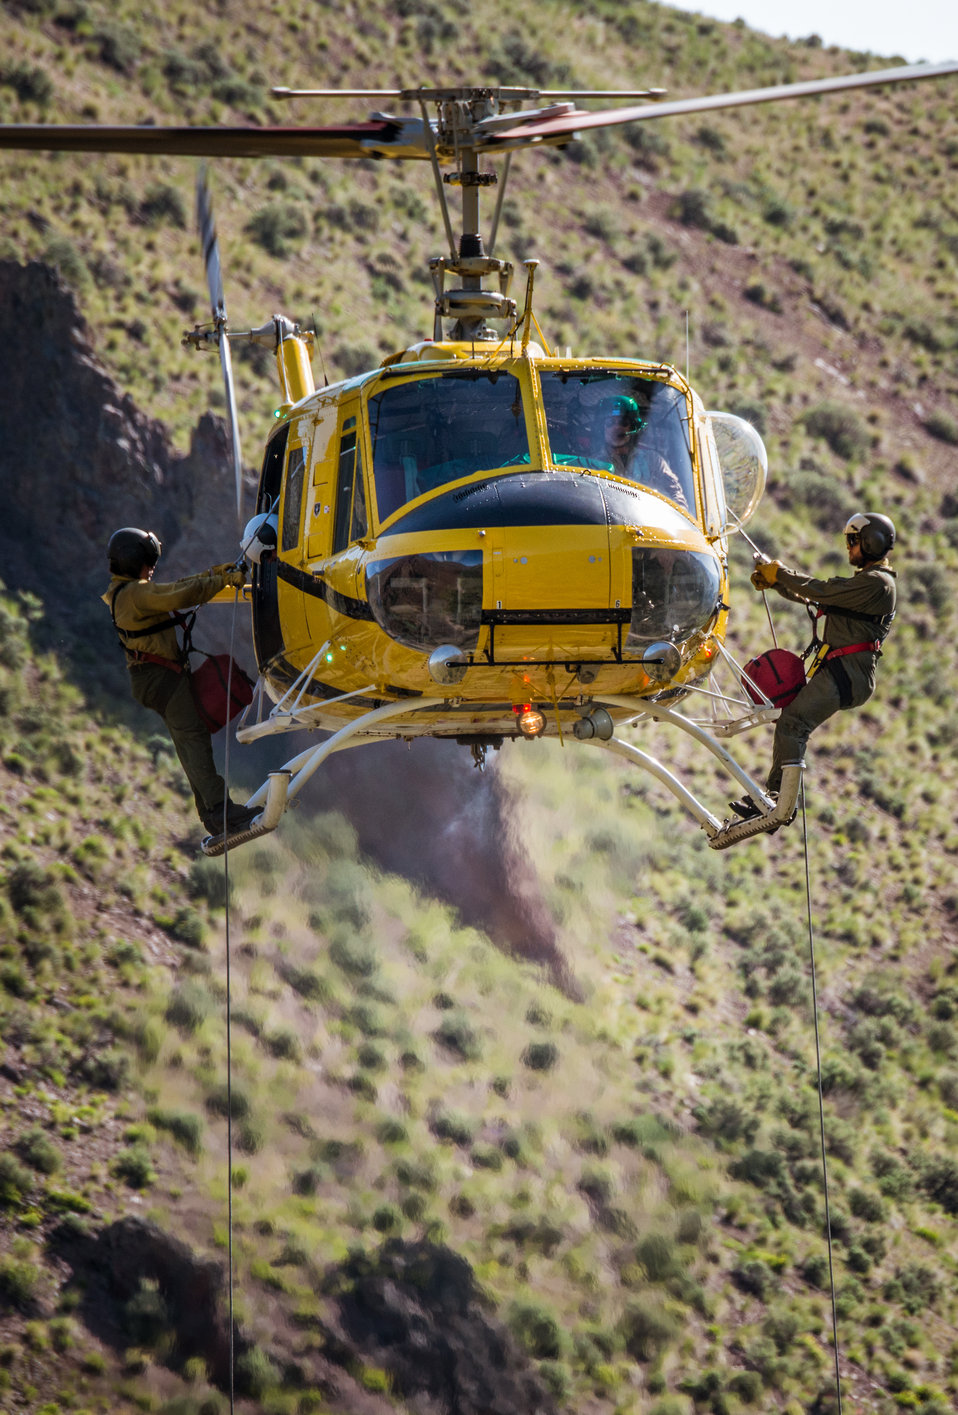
An Express's Bell 205A-1 Helicopter maintains altitude and position, both critical, for veteran wildland firefighter rappellers to descend to a landing zone in the Perreau Creek area, during the U.S. Department of Agriculture (USDA), U.S. Forest Service (USFS) National Helicopter Rappel Program’s Rappel Academy at Salmon Air Base, in Salmon, Idaho, on Thursday, May 15, 2014.